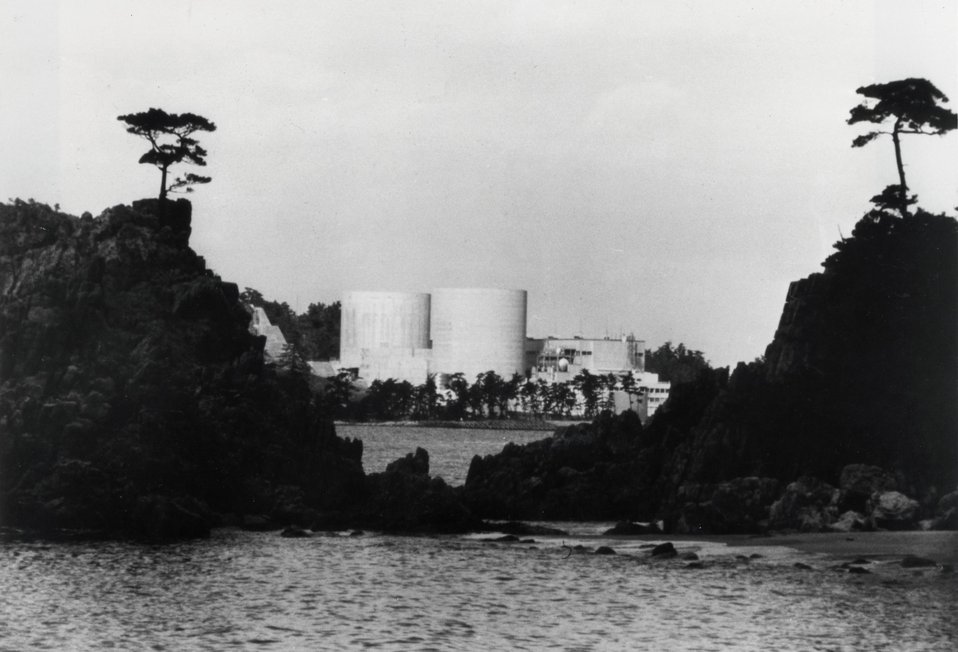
Kansai Electric Power Company's (KEPCO) Mihama Unit 1 nuclear power plant, a Westinghouse-built 34-Mwe. pressurized water unit shown in this photo, went into commercial operation during 1970. c. 1971